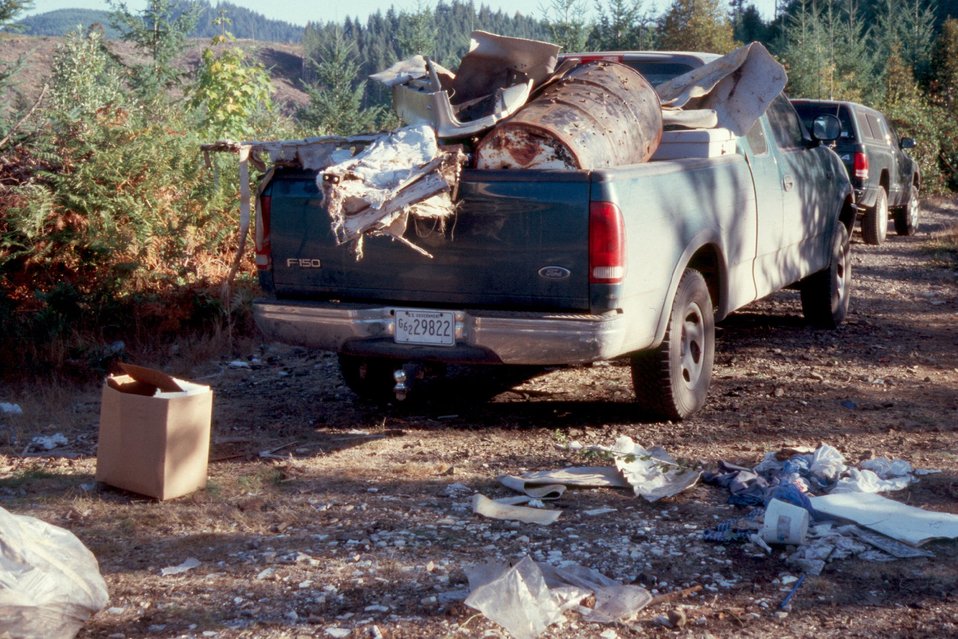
A BLM pickup is ready to haul off trash collected from a dump site on BLM land